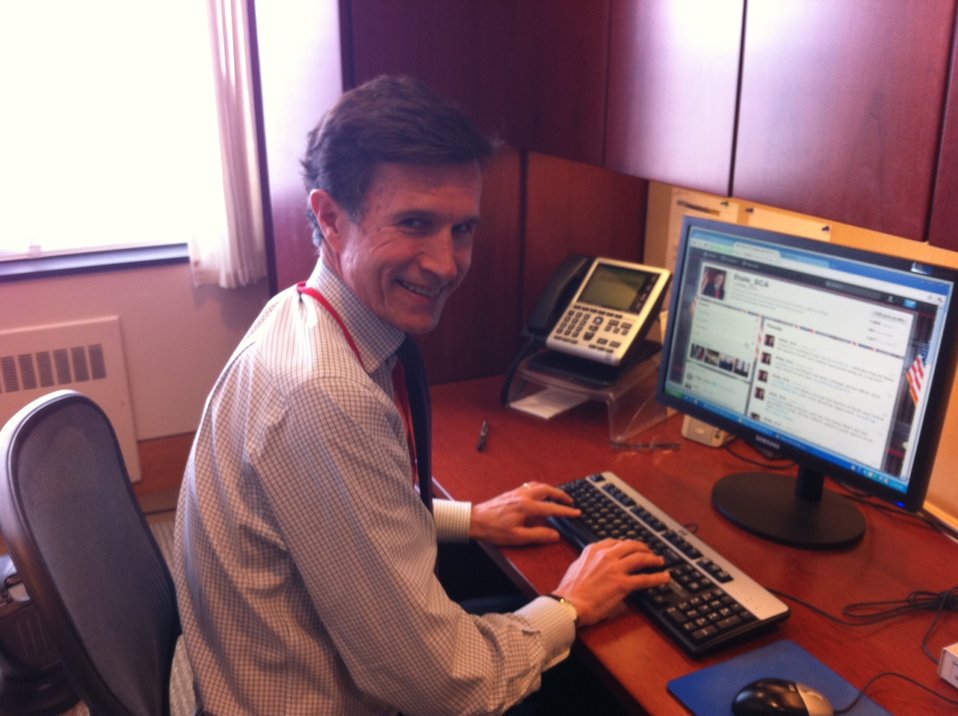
Assistant Secretary Blake Responds to #AskSCA Questions

Assistant Secretary of State for South and Central Asian Affairs Robert O. Blake, Jr., responds to #AskSCA questions on the Bureau of South and Central Asian Affairs' Twitter account, @State SCA, at the U.S. Department of State in Washington, D.C., on February 28, 2012.